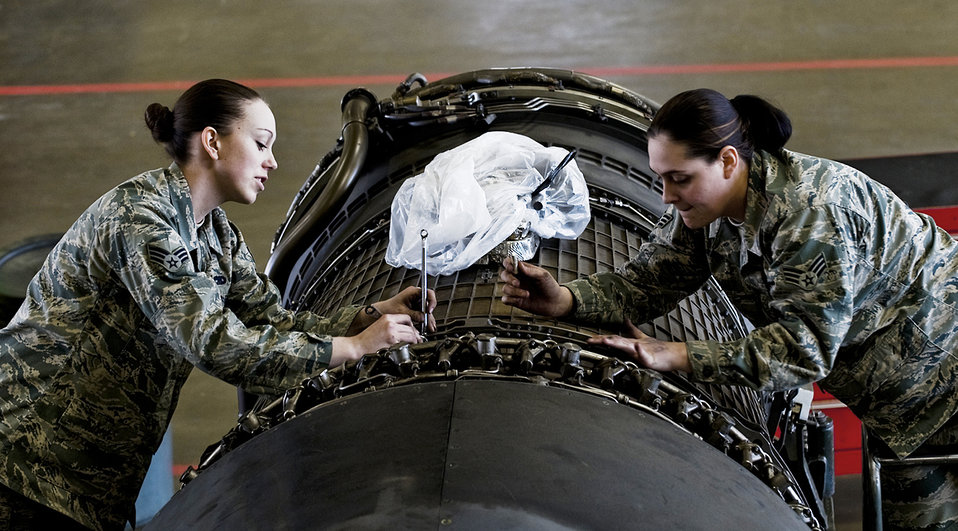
No barriers

Senior Airmen Erica Plymale (left) and Angelique Hasz work on a B-1B Lancer engine, March 11, 2010, at Ellsworth Air Force Base, S.D. The Airmen are aerospace propulsion journeymen with the 28th Maintenance Squadron.